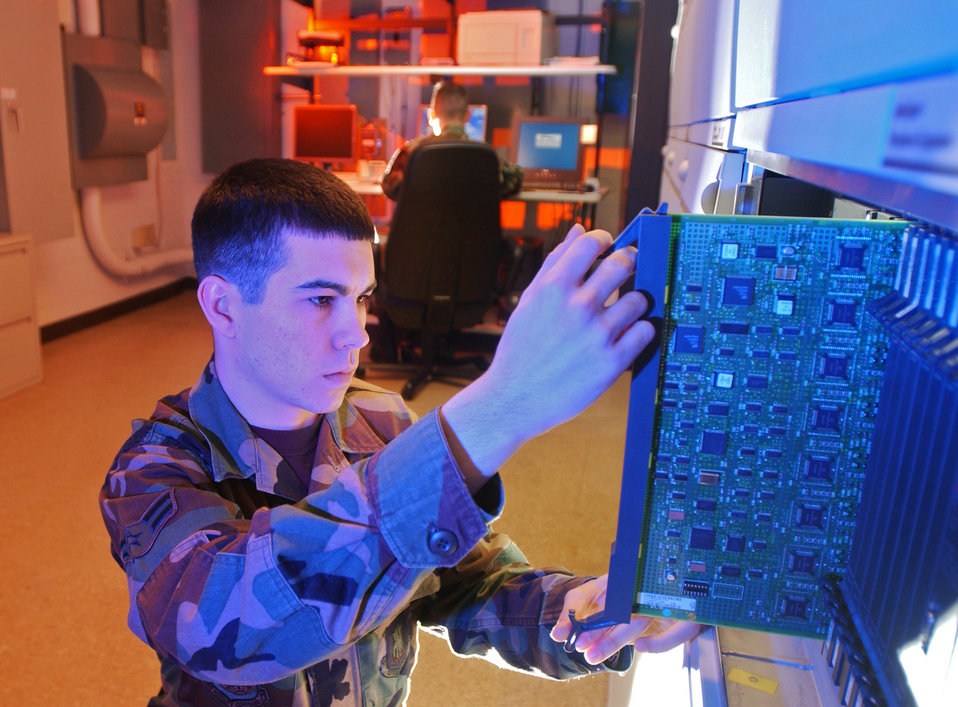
Upgrading the switch

MCCONNELL AIR FORCE BASE, Kan. -- Airman 1st Class Jason Barker works on a telephone switch here Jan. 24, by adding 2,000 digital quality lines with call tracing capabilities. Airman Barker is assigned to the 22nd Communications Squadron.